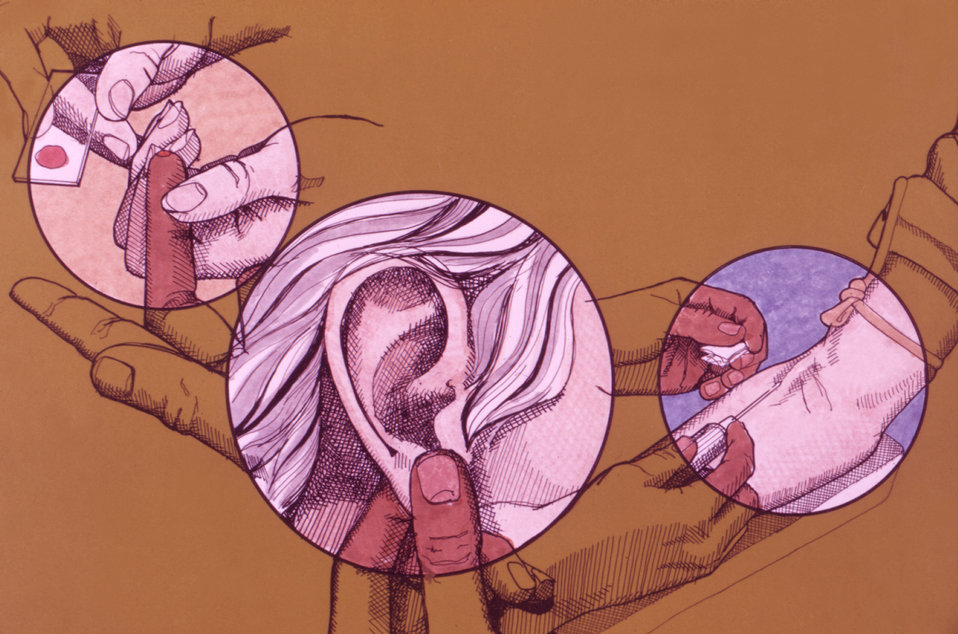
These are some sites used when collecting blood specimens using techniques such as a finger-stick, or anticubital phlebotomy.